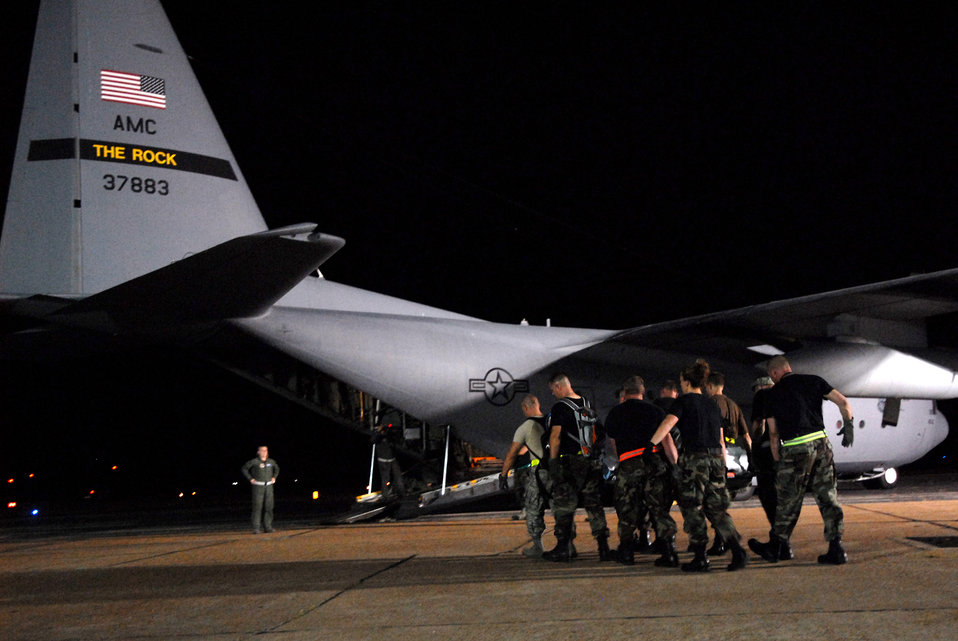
Airman evacuate patients from Beaumont

Airmen load hospital patients onto a C-130 aircraft Sept. 12 at the airport in Beaumont, Texas, for a flight to Lackland Air Force Base in San Antonio. These patients are being transported by aircrews from Little Rock AFB, Ark., and medical Airmen from the 908th Aeromedical Evacuation Squadron at Scott AFB, Ill., in preparation for Hurricane Ike's landfall in southern Texas.